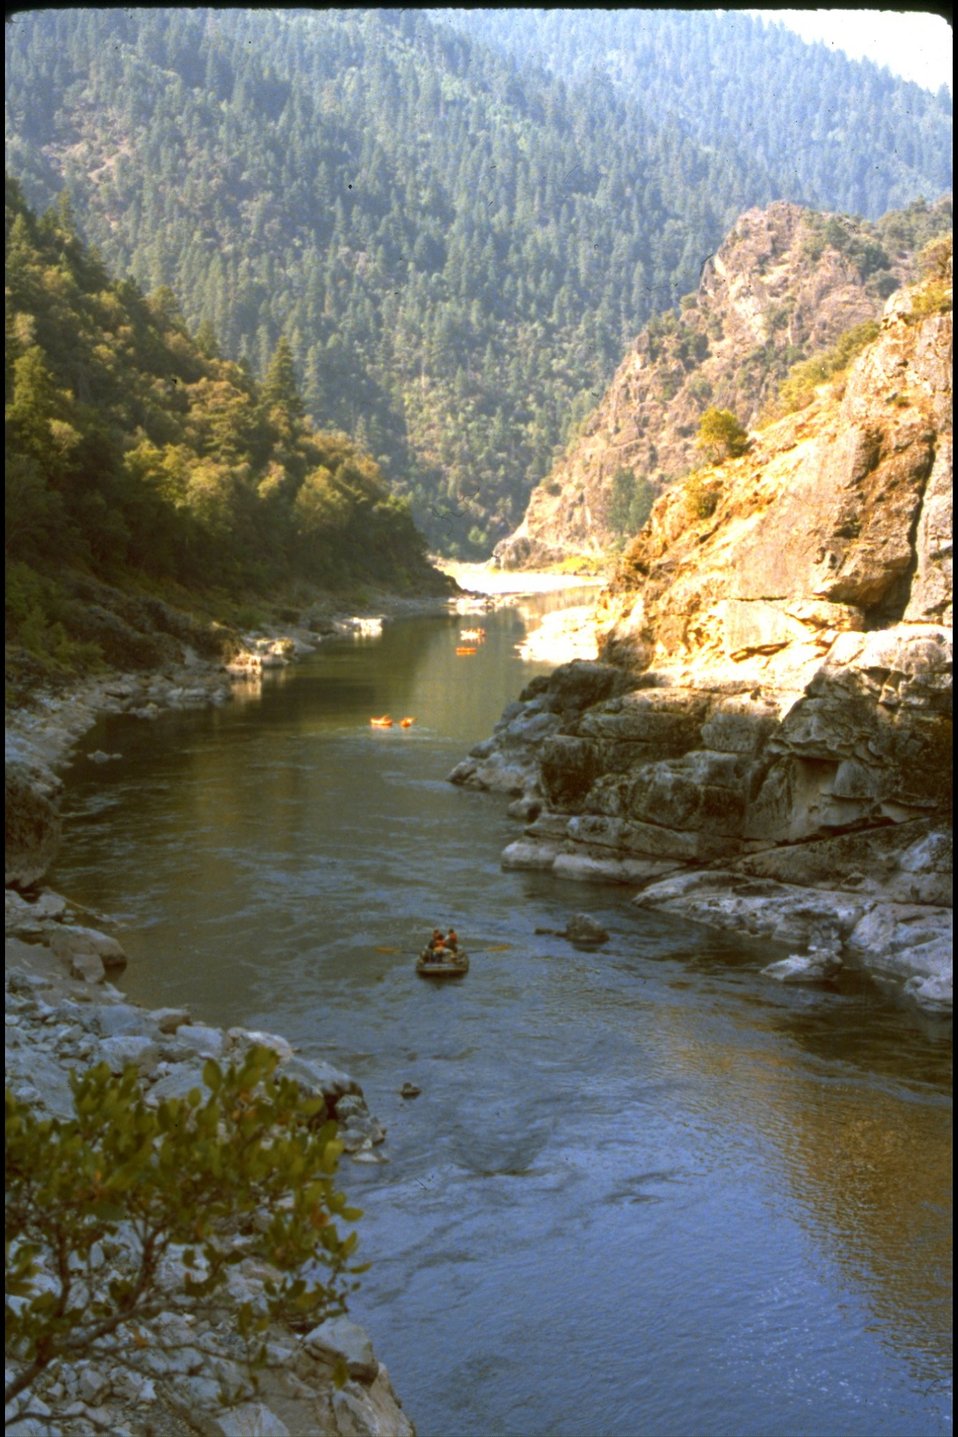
Above Sanderson's Island